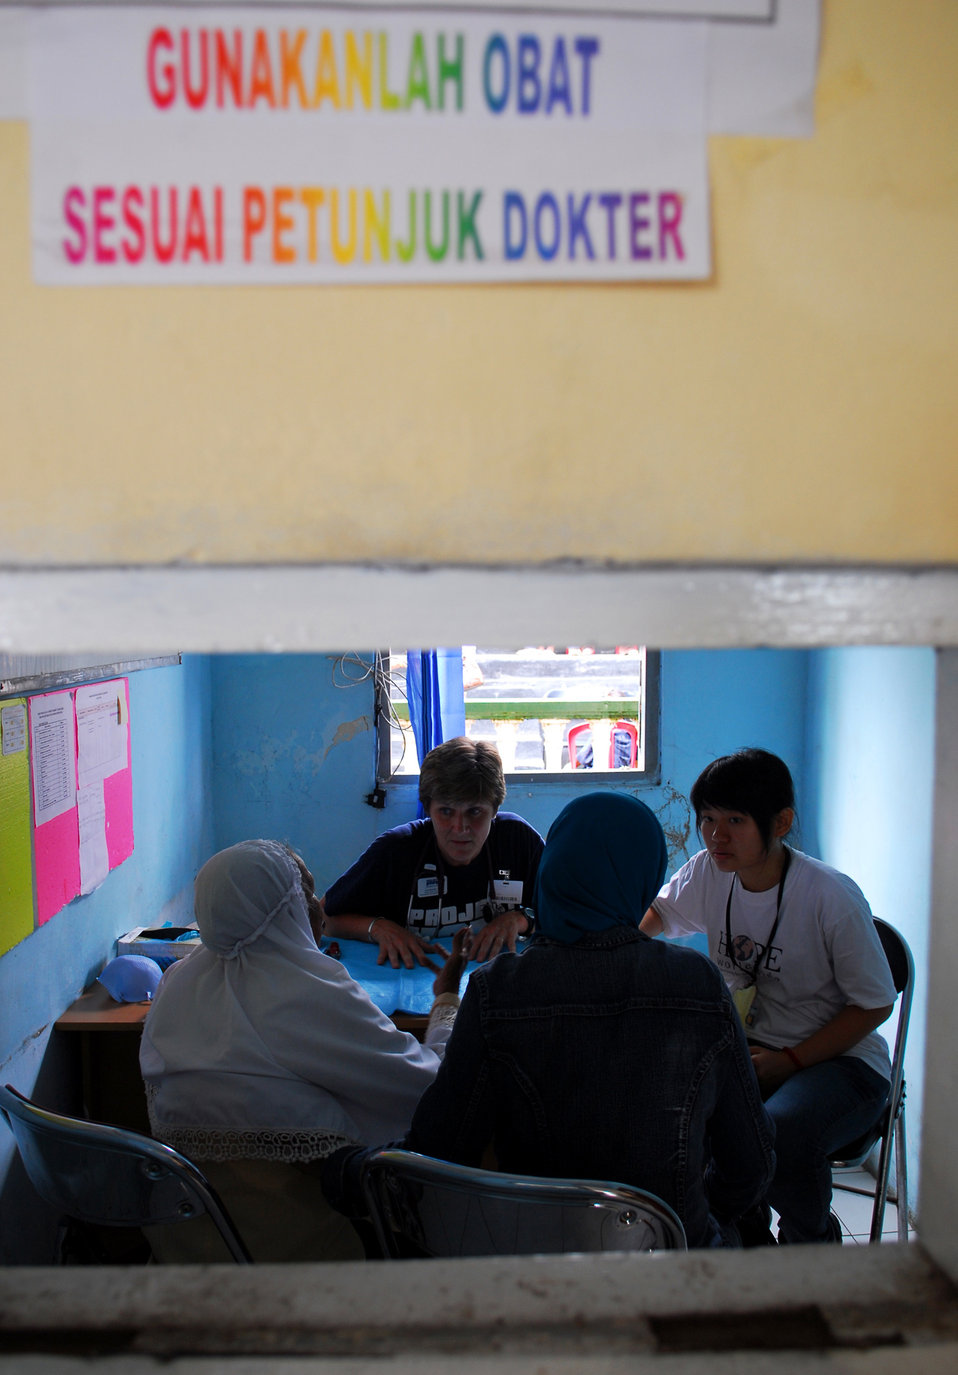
Project HOPE Medical Professional Dr. Bemiller Listens as a Patient Talks About Her Medical Condition

Project HOPE medical professional Dr. Lynn Bemiller listens as a patient talks about her medical condition during a medical civic action program in Sulamadaha, Indonesia, on July 20, 2010. The Military Sealift Command hospital ship USNS Mercy (T-AH 19) is in the North Maluku Islands conducting Pacific Partnership 2010, the fifth in a series of annual U.S. Pacific Fleet endeavors conducted in Indonesia as a disaster relief exercise aimed at strengthening regional partnerships.